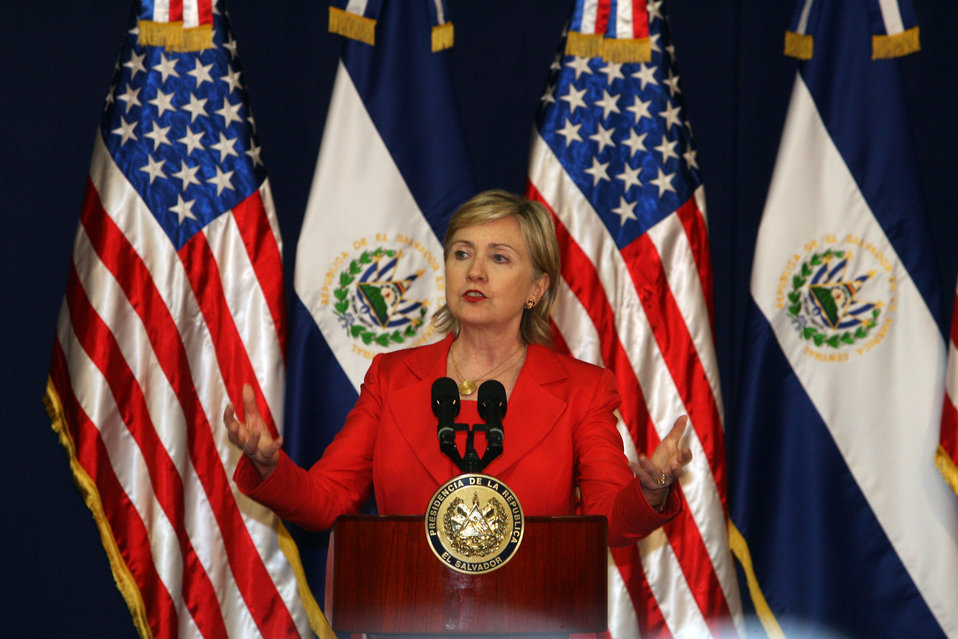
Joint Press Conference in El Salvador With Secretary Clinton and Salvadoran President

U.S. Secretary of State Hillary Rodham Clinton offers remarks during a press conference held in the Presidential Palace in San Salvador, El Salvador June 1, 2009.